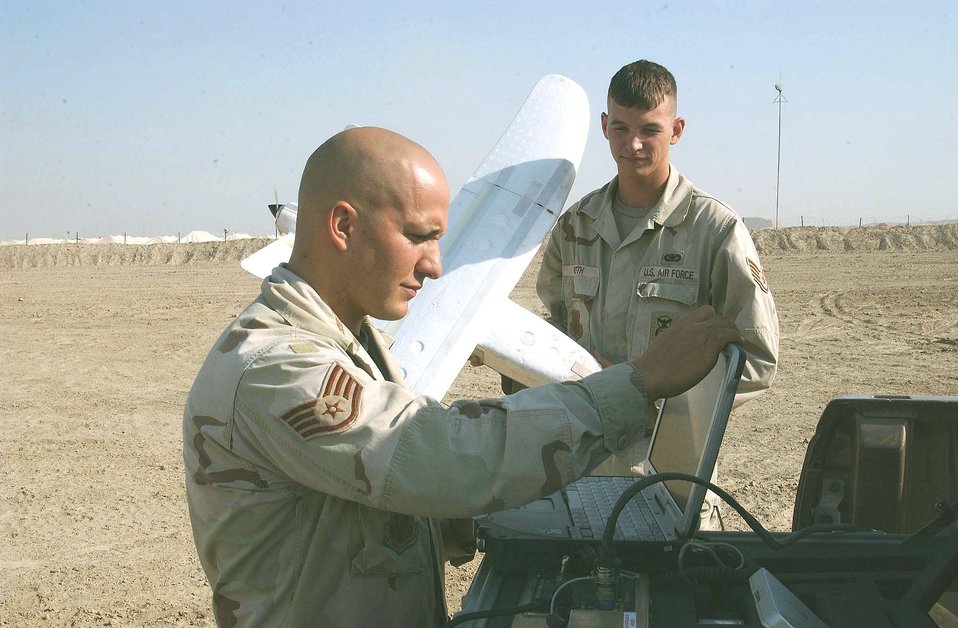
Preparing for flight

TALLIL AIR BASE, Iraq -- Staff Sgt. Joseph Vialpando (left) and Staff Sgt. Michael Roth prepare the Desert Hawk aircraft for flight. The lightweight aircraft is part of the Force Protection Airborne Surveillance System used here to look over the horizon for terrorist activities. Vialpando and Roth are part of the 332nd Expeditionary Security Forces Squadron.